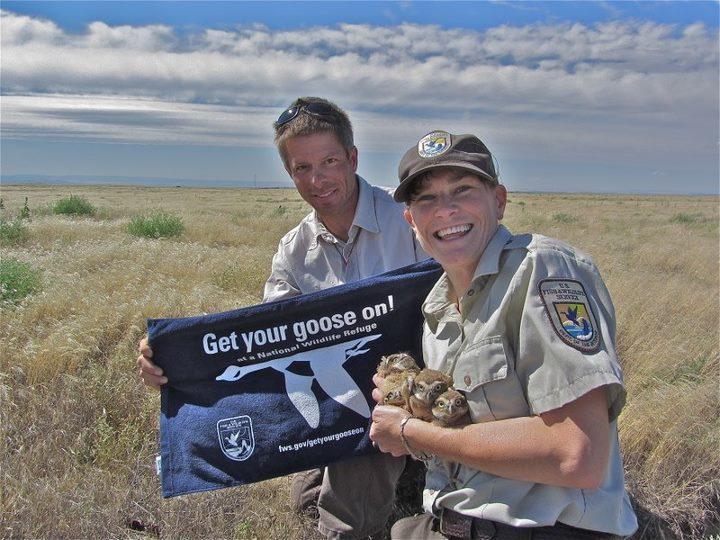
Getting Your Goose On is a Hoot!

USFWS employees James Rebholz and Sue McDonald transport burrowing owls to the U.S. Army's Umatilla Chemical Depot in Oregon. The Depot received the U.S. Fish and Wildlife Service’s 2010 Military Conservation Partner Award recognizing an extraordinary conservation partnership that, among other highlights, has provided numerous conservation benefits for the burrowing owl and long-billed curlew.